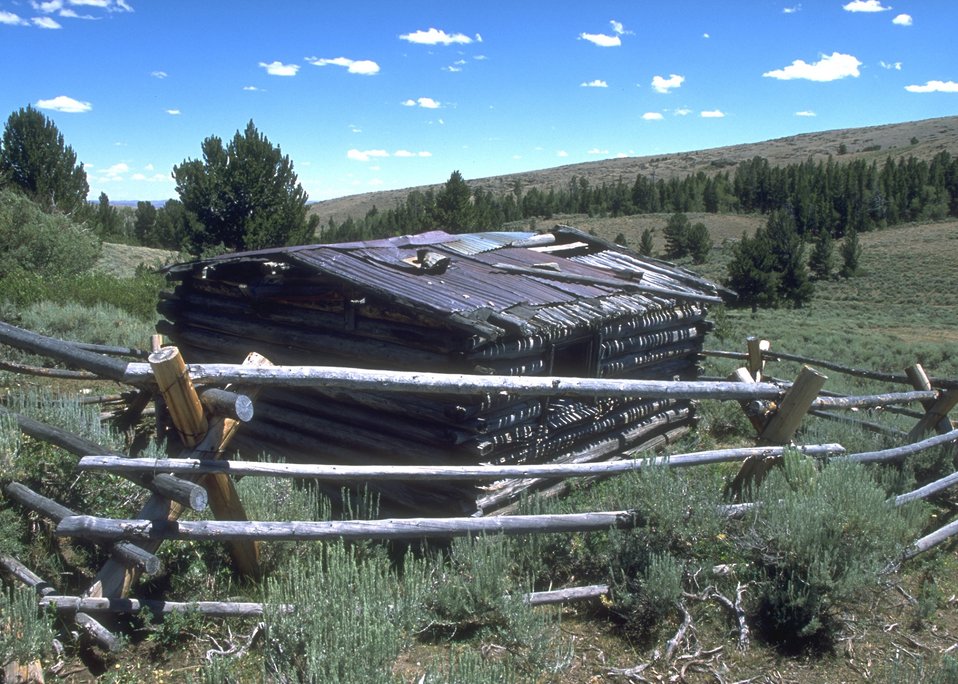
Cabin north of South Pass City along the Continental Divide Trail, Lander Field Office.